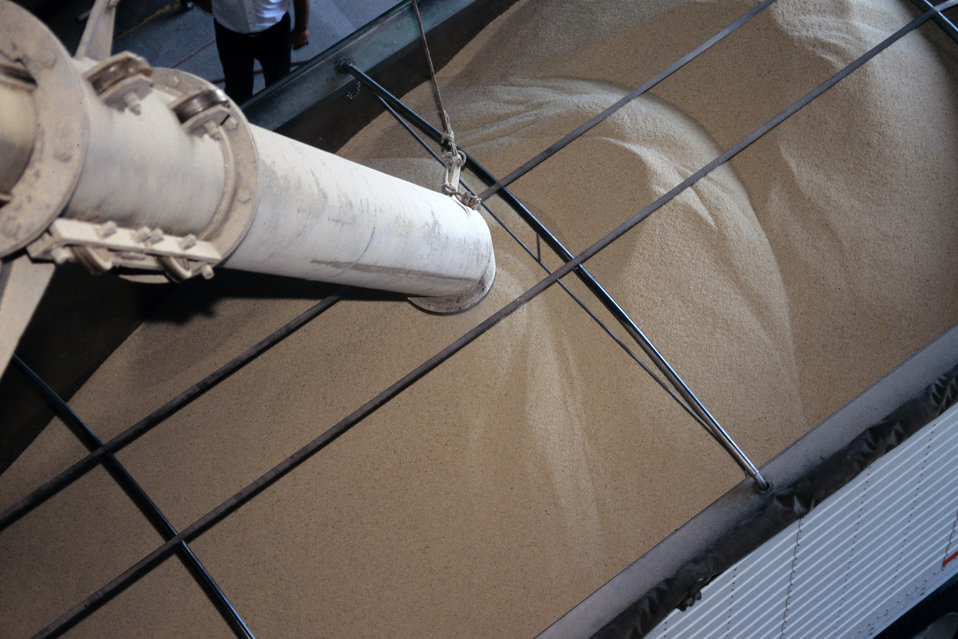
The rice hopper on a truck is loaded with rice for shipment to a processing facility at Riceland Foods Incorporated in Jonesboro, AR on Sept. 1, 1996. The U.S. Department of Agriculture (USDA) Grain Inspection, Packers and Stockyards Administration (GIPSA) offers inspection services for rice upon request on a fee basis for both domestic and export shipments. Rice inspection services are divided into two basic types: inspection for grade or factor analysis without grade. Inspection for grade involves analyzing the sample according to the quality factors listed in the Official U.S. Standards for Rice and certifying the applicable numeric grade designation, the quality factors responsible for the grade assignment, and any other quality factors the customer requests. Factor analysis involves the analysis of quality factors requested by the applicant for service without the certification of an applicable numeric grade designation. Factors requested by applicants might include free fatty acid, total oil and free fatty acid, stain as a count, broken in brown rice, false smut, and aflatoxin. Official inspections result in the issuance of an official certificate, which reports the grade of the rice. U.S. and international buyers rely on official USDA inspection certificates to provide accurate, official descriptions of the grade, class, and condition of the inspected rice. Official certificates are receivable by all offices and all courts of the United States as prima facie evidence of the truth of the statements stated thereon.